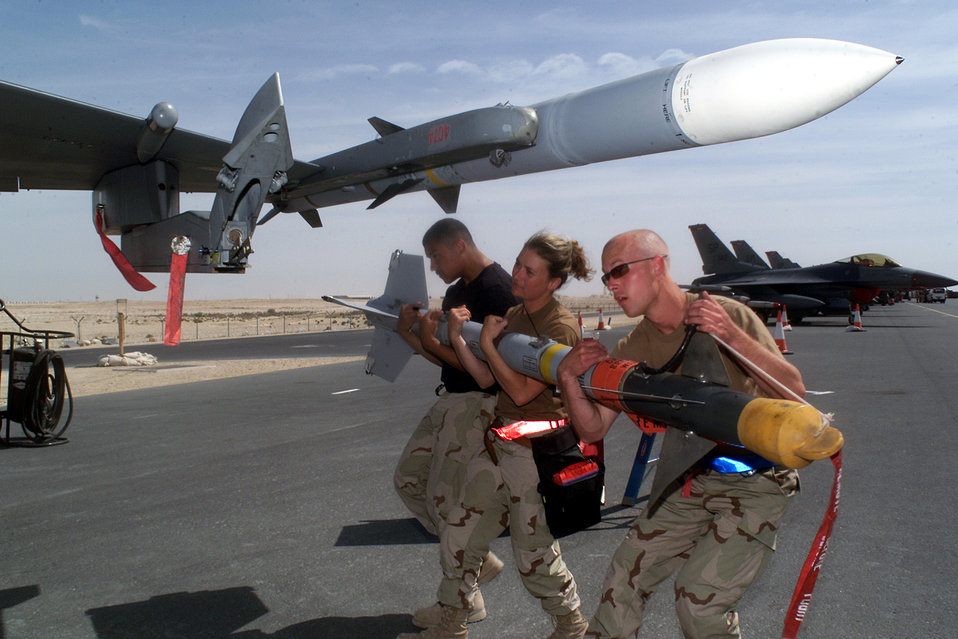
Team lift

OPERATION ENDURING FREEDOM -- Airman 1st Class Bradley Smith (right to left), Staff Sgt. Jessica German and Airman 1st Class Gerardo Gonzalez, mount an AIM-9 missile on an F-16 Fighting Falcon. The weapons troops are assigned to 379 Expeditionary Aircraft Maintenance Squadron. They are working at a forward-deployed location in support of Operation Enduring Freedom.